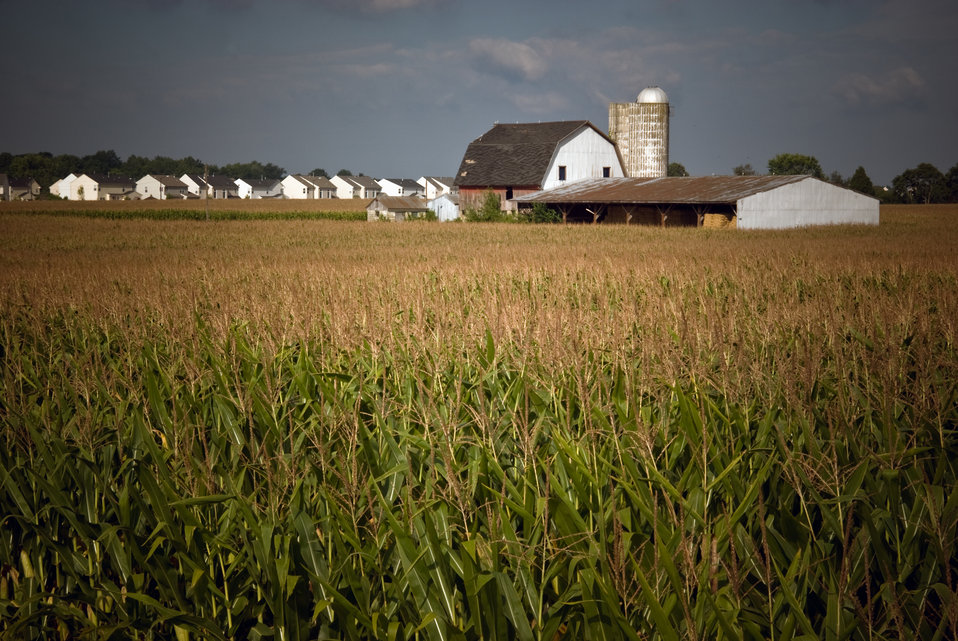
A new housing development encroaches on valuable farmland in the Chesapeake Bay Watershed in Easton, Maryland on August 10, 2008.